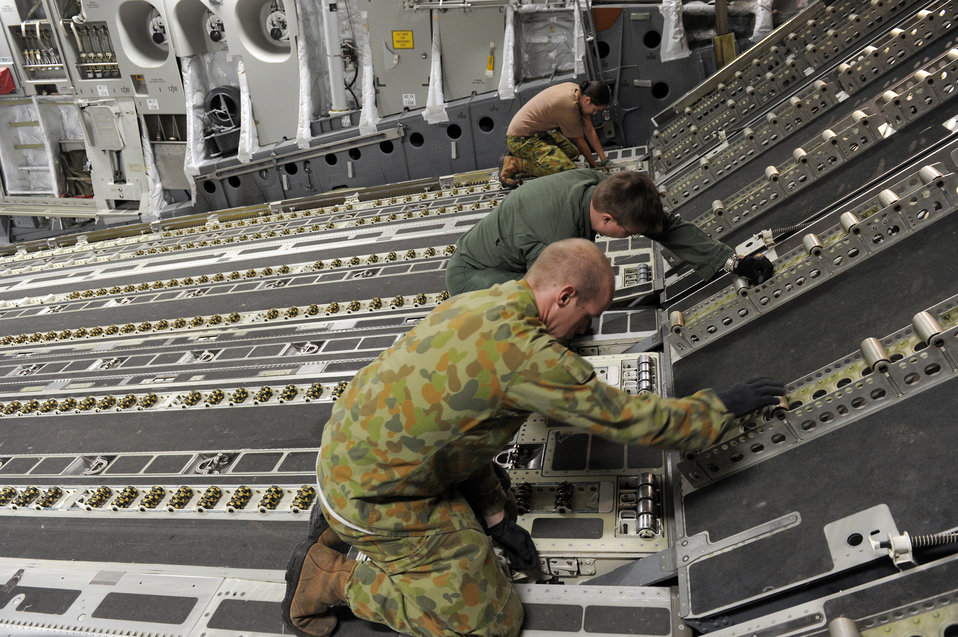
RAAF at Sendai

Members of the Royal Australian Air Force prepare their C-17 Globemaster III for cargo prior to take off March 24, 2011, at Sendai Airport, Japan. Yokota Air Base Airmen have had the rare opportunity to work the 36th Squadron and 1st Aircraft Operation Support Squadron from the RAAF during Operation Tomodachi.